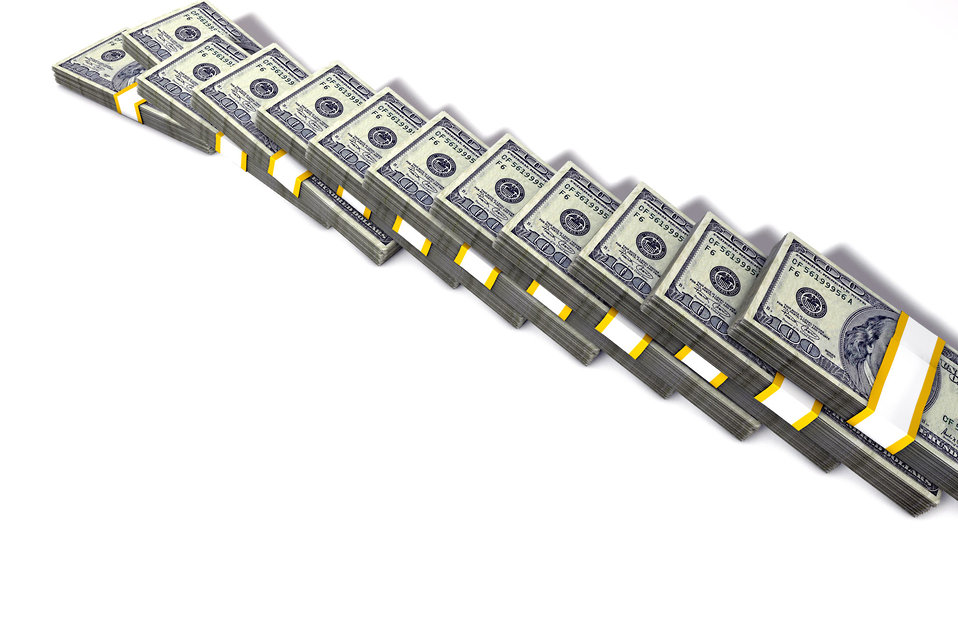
$ 100 in high definition.